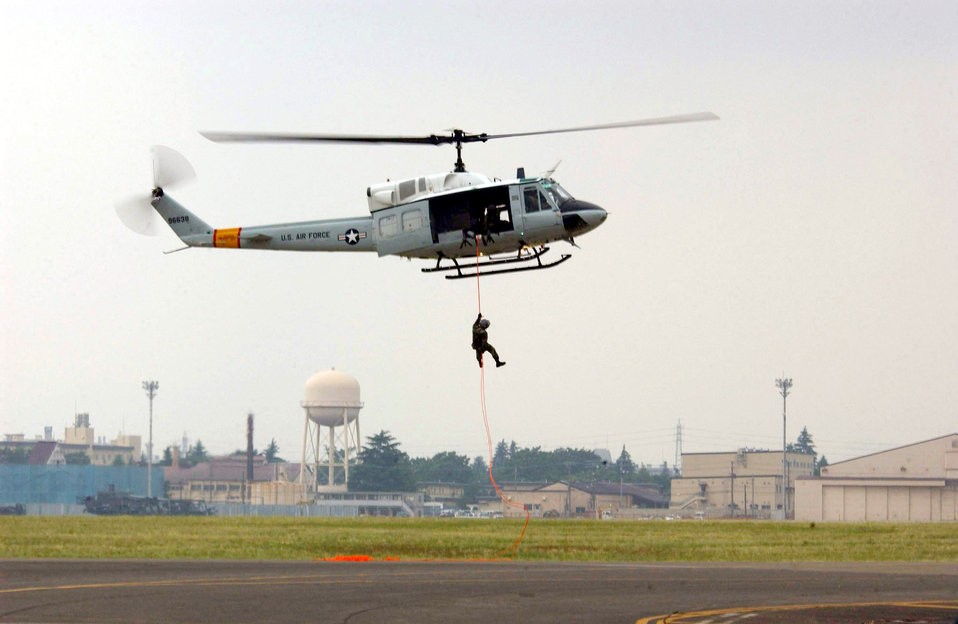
Watch the first step

YOKOTA AIR BASE, Japan (AFPN) -- Staff Sgt. David Jewell rappels from a UH-1 Huey helicopter during training here May 14. He is a survival, evasion, resistance and escape instructor from the 374th Operation Support Squadron here. The purpose of the training was to expand the mission capabilities and increase training opportunities for 459th Airlift Squadron helicopter crews here.